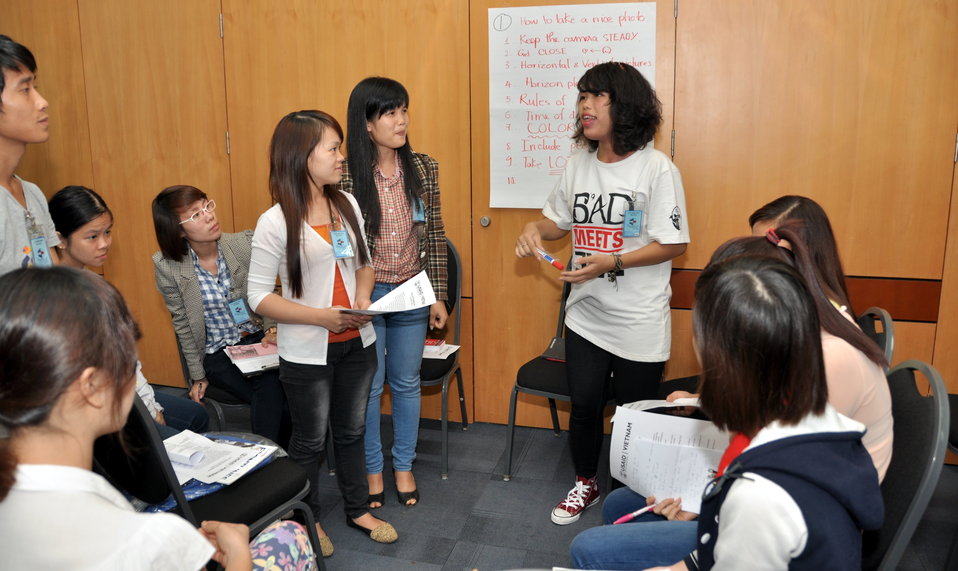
Students join the ‘USAID and Higher Education in Vietnam’ talk

Photo: @USAIDVietnam, November 19, 2012